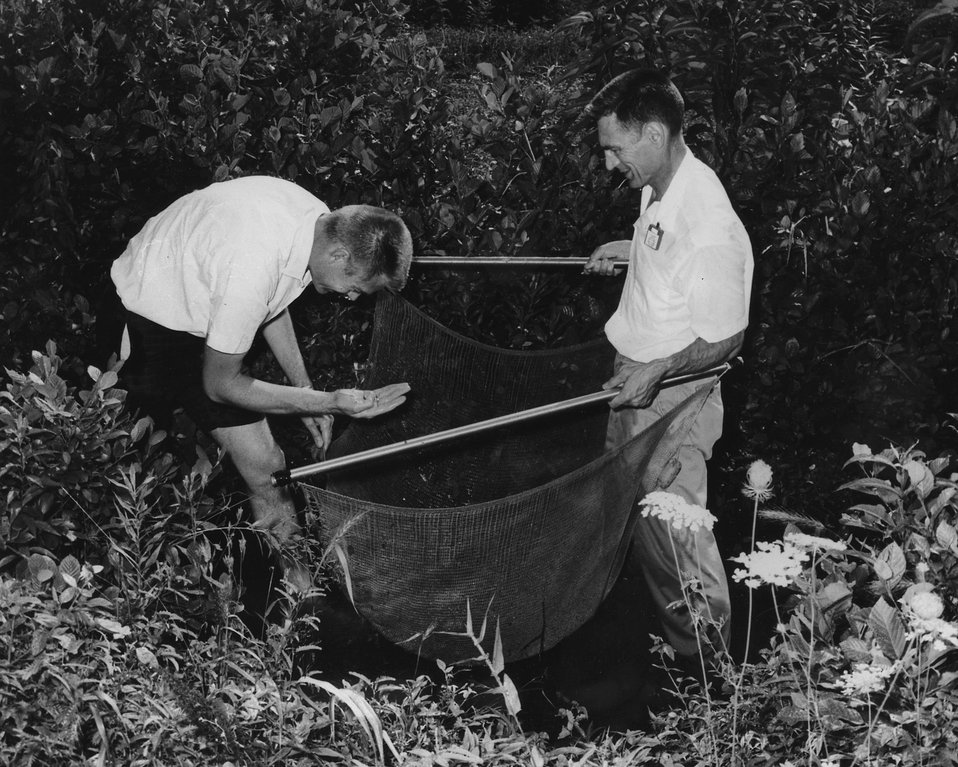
Insects and small animals 'tagged' with harmless amounts of radioactive material are traced and studied by participants in the radiation ecology courses presented by the Special Training Division of Oak Ridge Associated Universities, in cooperation with Oak Ridge National Laboratory. c. 1970